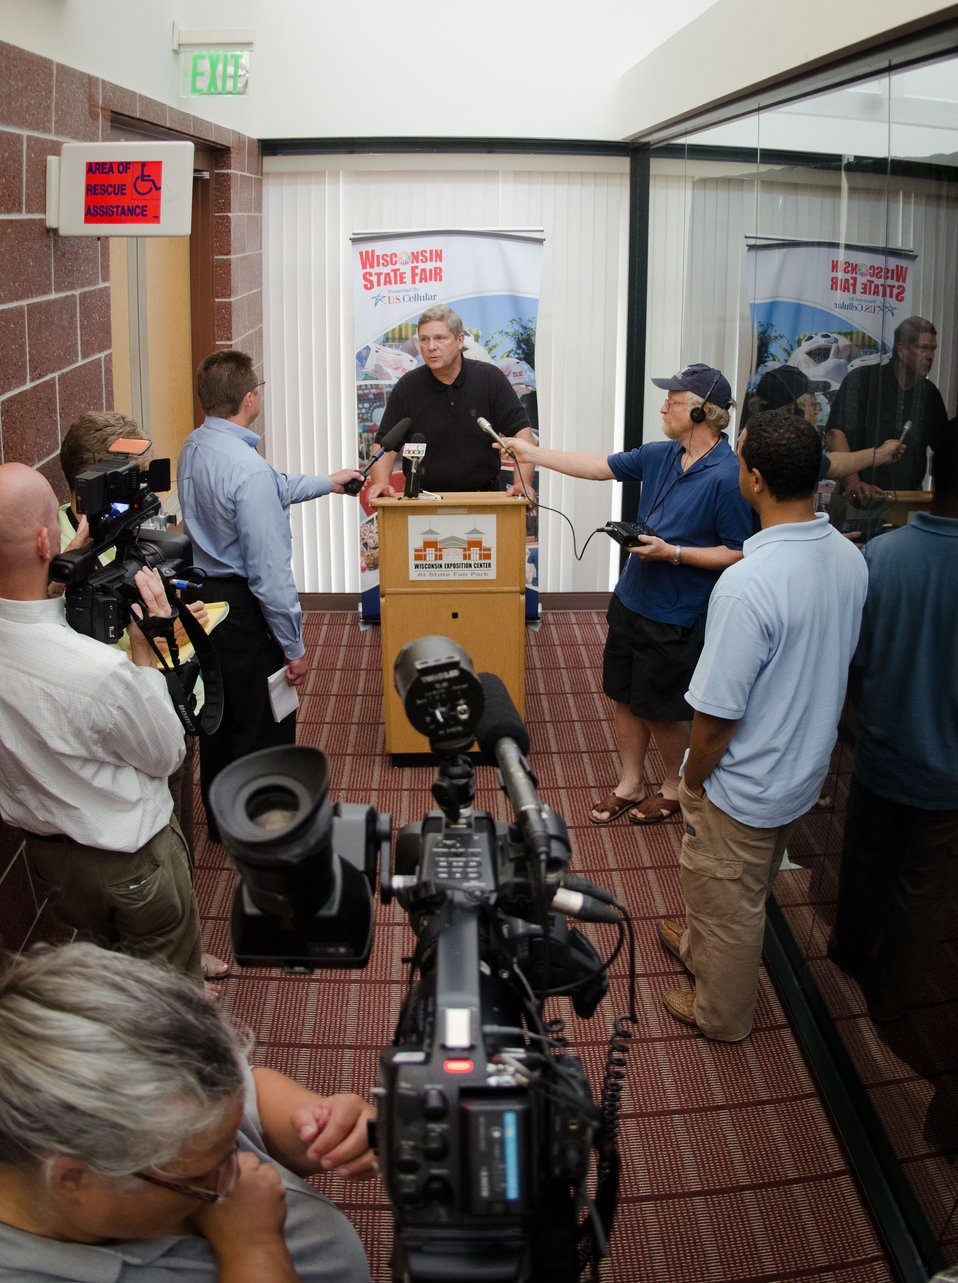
Agriculture Secretary Tom Vilsack speaking with members of the press at the Wisconsin State Fair Grounds, Exposition Center in West Allis, WI, on Thursday, August 4, 2011.